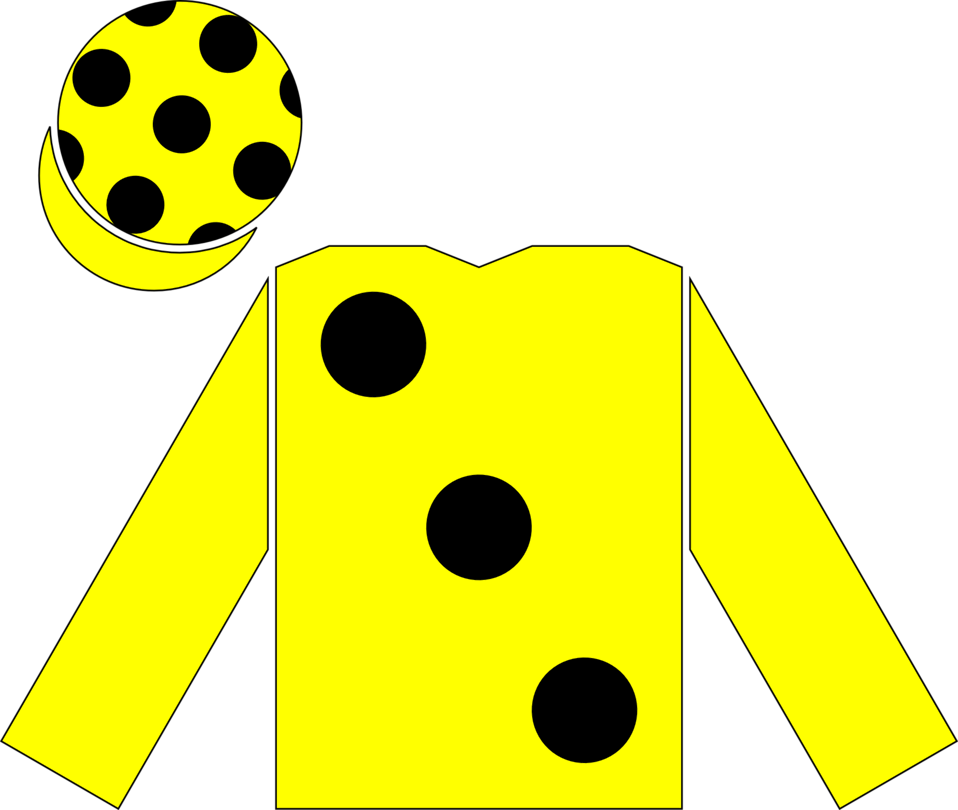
The en:racing silks of Obaid Al Maktoum, as worn by the jockey of High-Rise to victory in the en:1998 Epsom Derby.